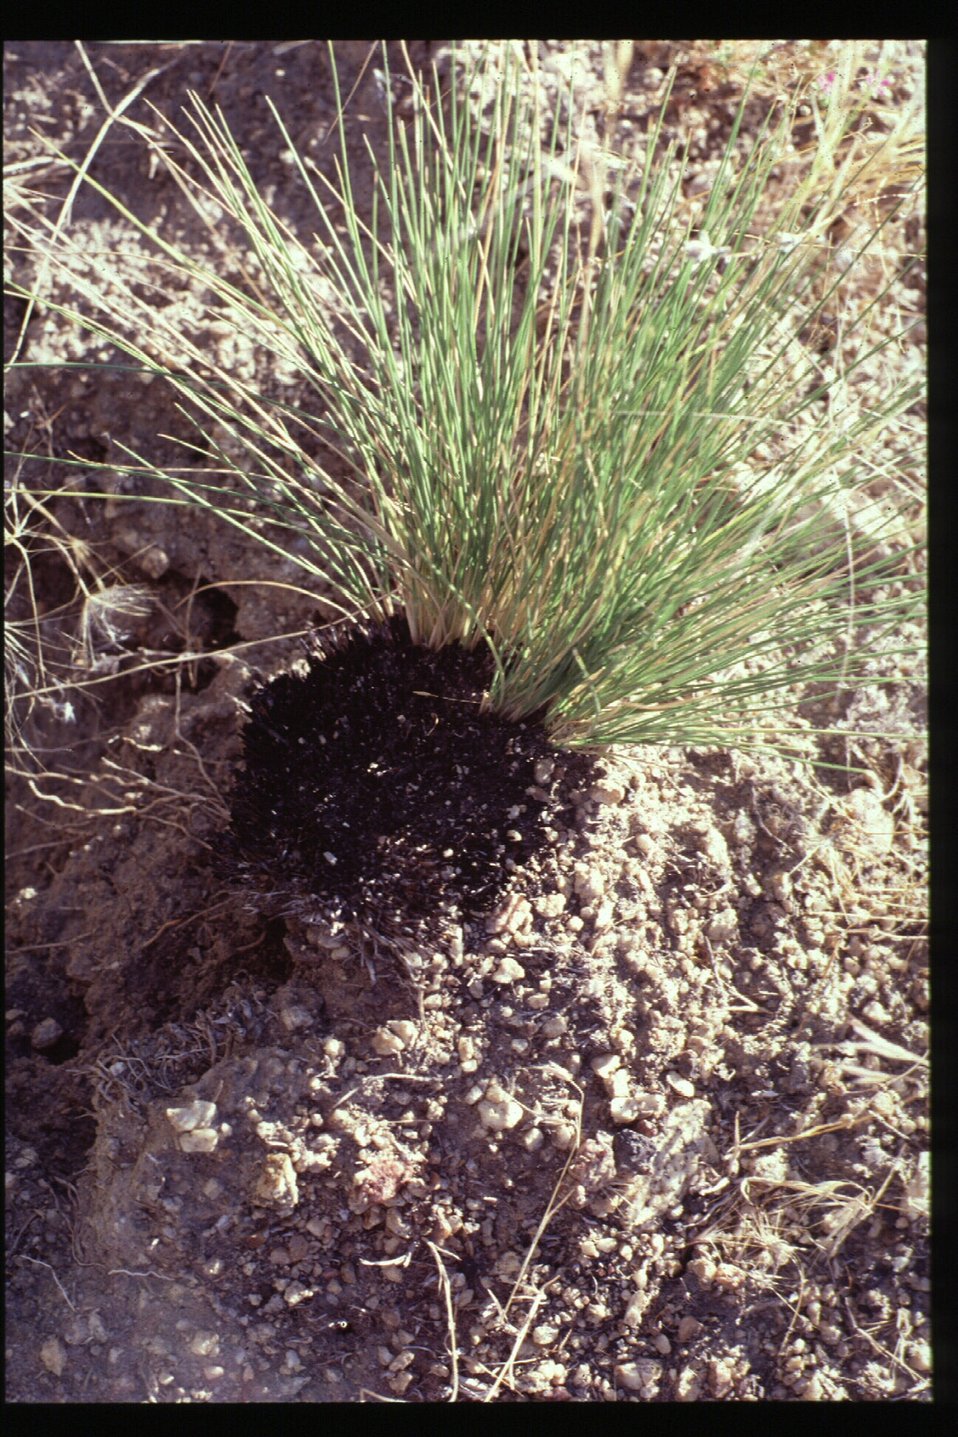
8th Street Fire Four Rivers Field Office LSRD Lower Snake River District